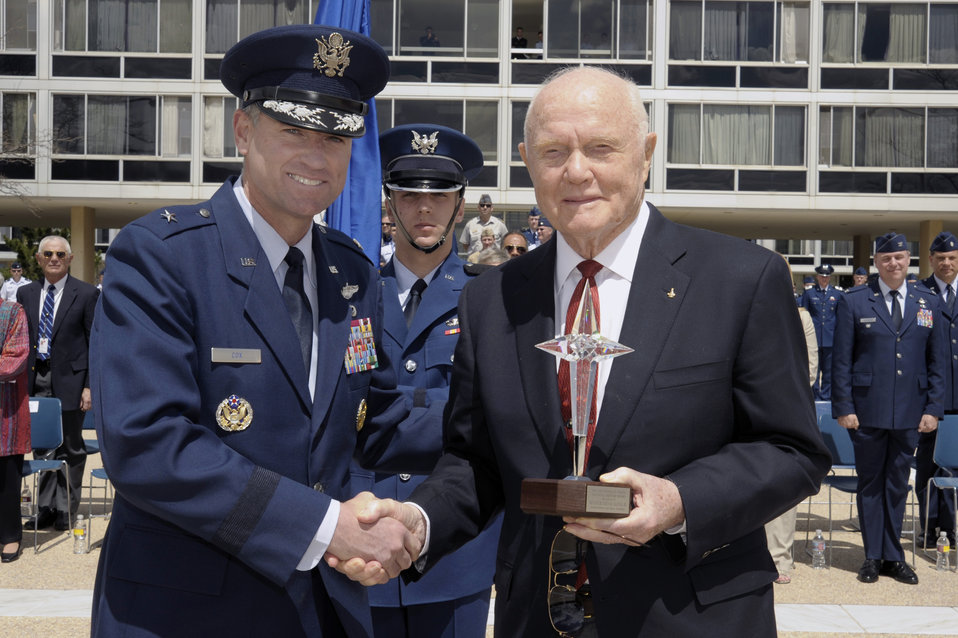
Academy honors Senator Glenn

Sen. John Glenn accepts the 2008 Thomas D. White National Defense Award from Commandant of Cadets Brig. Gen Samuel Cox during a ceremony April 22 on the U.S. Air Force Academy terrazzo.